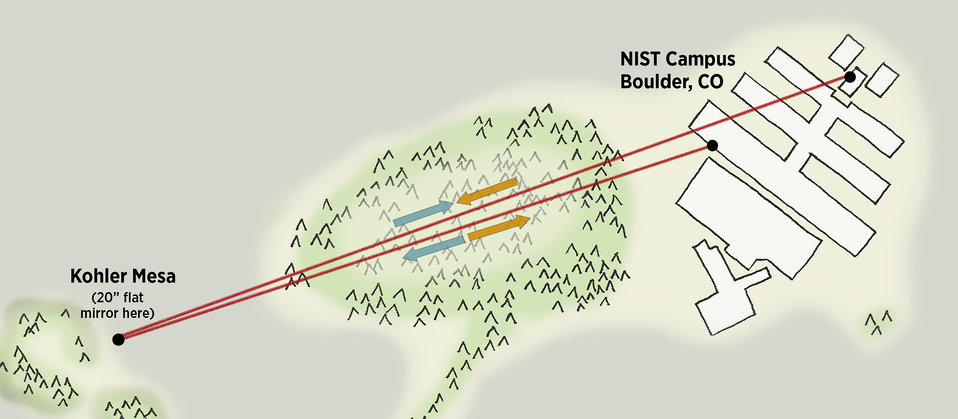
Time Signals

NIST researchers transferred ultraprecise time signals over the air between a laboratory on NIST?s campus in Boulder, Colorado, and nearby Kohler Mesa. Signals were sent in both directions, reflected off a mirror on the mesa, and returned to the lab, a total distrance of approximately two kilometers. The two-way technique overcomes timing distortions on the signals from turbulence in the atmosphere, and shows how next-generation atomic clocks at different locations could be linked wirelessly to improve distribution of time and frequency information and other applications.